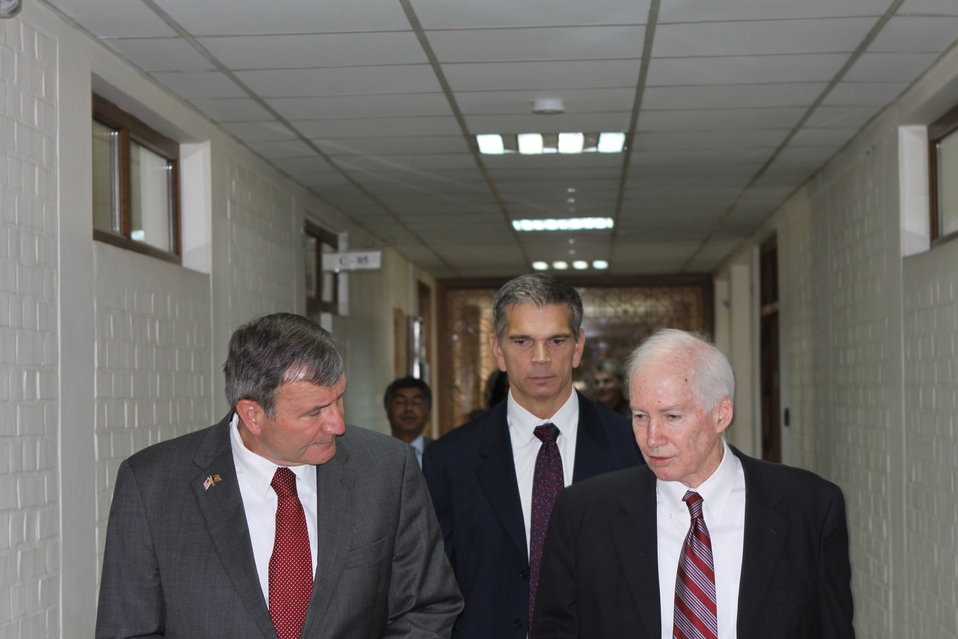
100526 AUAF Graduation 024